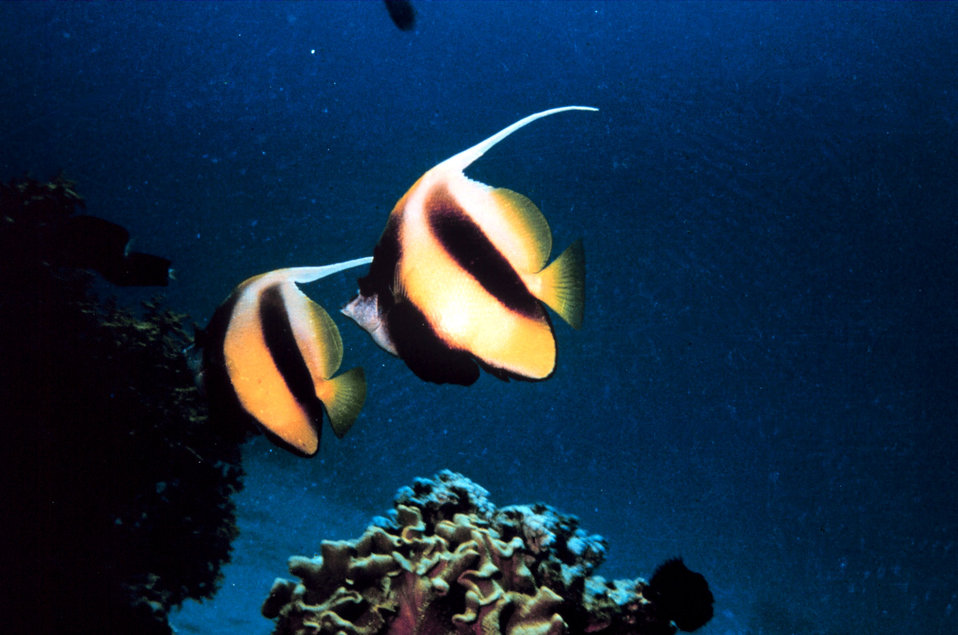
Bannerfish (Heniochus intermedius)